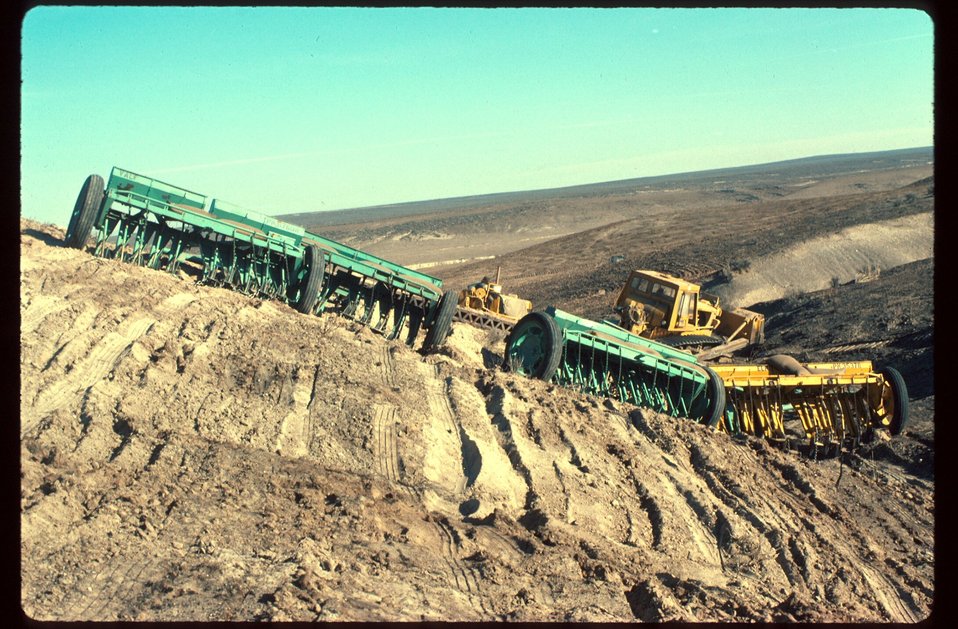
Rangeland Drill Seeding Range Restoration Project